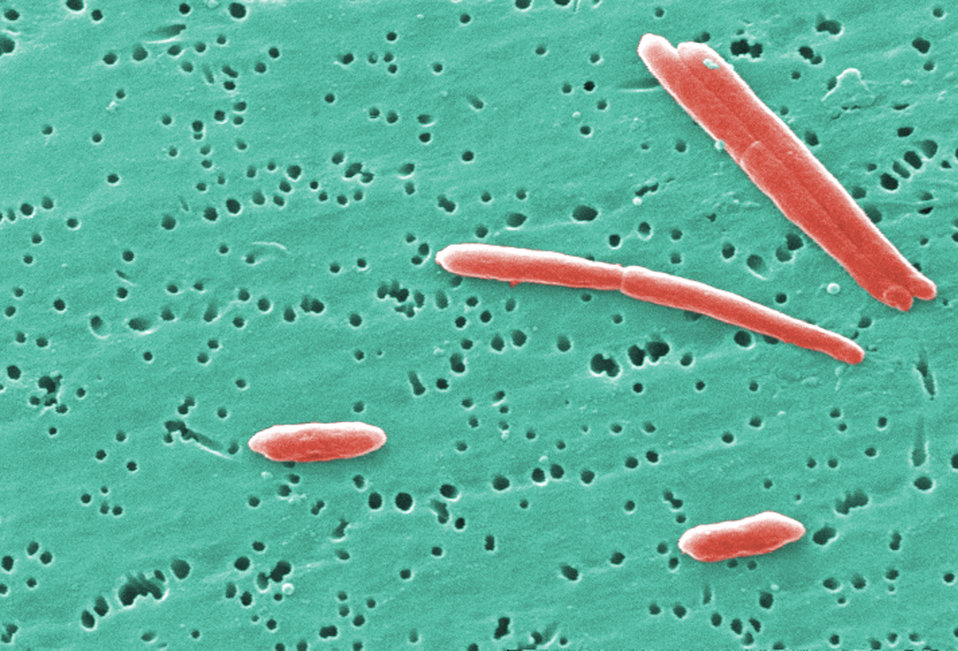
This digitally-colorized scanning electron micrograph (SEM) depicted a small grouping of Gram-negative Sebaldella termitidis bacteria.